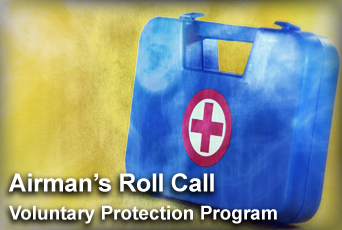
Airman's Roll Call highlights Voluntary Protection Program

This week's Airman's Roll Call focuses on safety and occupational health.